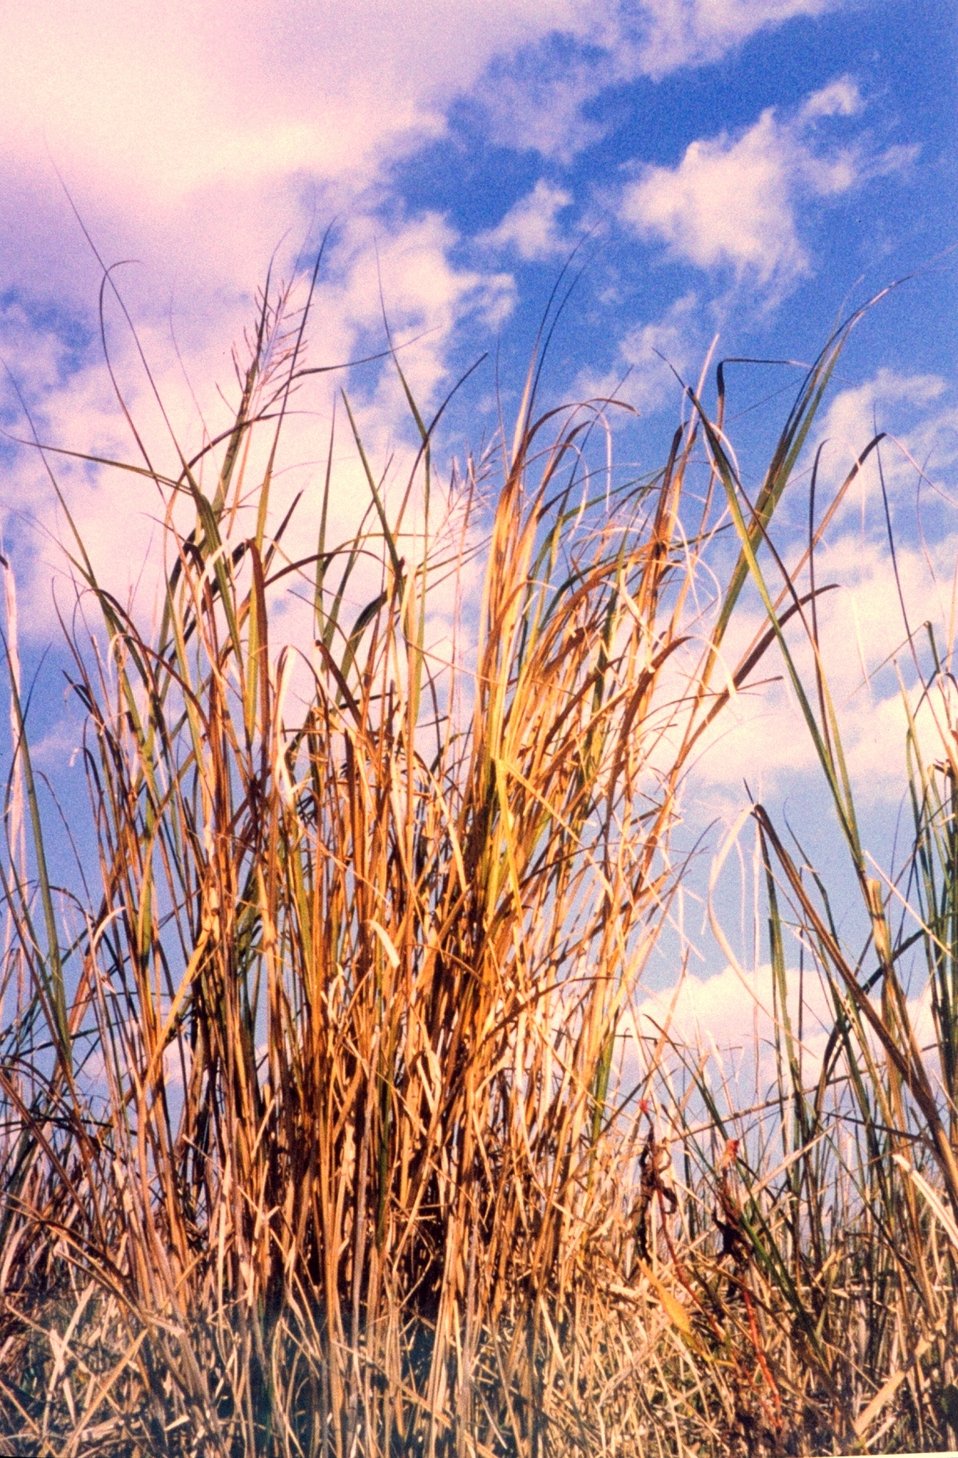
Unidentified grass type. Wild rice?